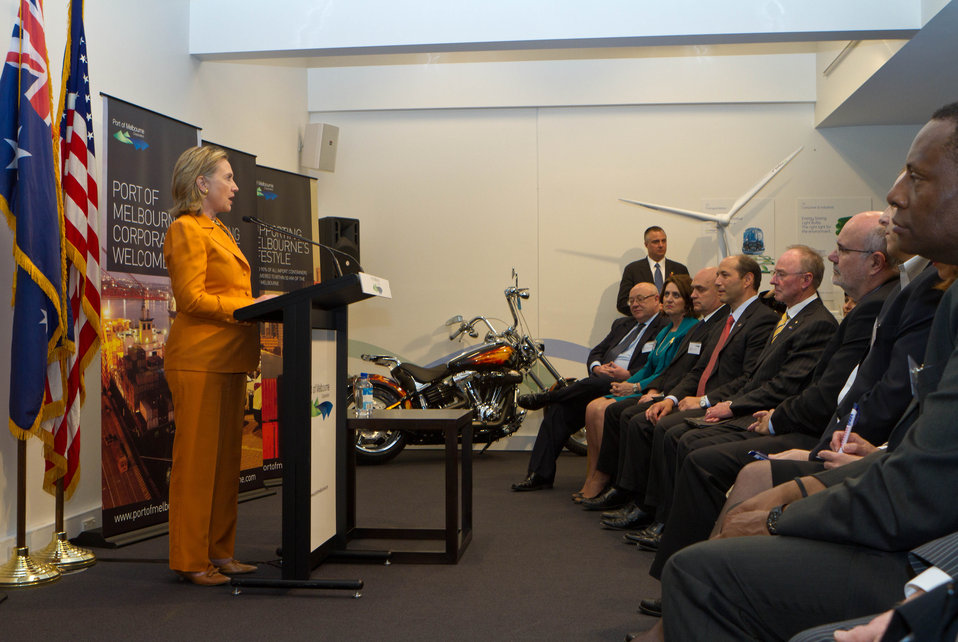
Secretary Clinton Delivers Remarks at a U.S. Trade Event

U.S. Secretary of State Hillary Rodham Clinton delivers remarks at a U.S. trade promotion event at the Port of Melbourne in Australia, on November 7, 2010.